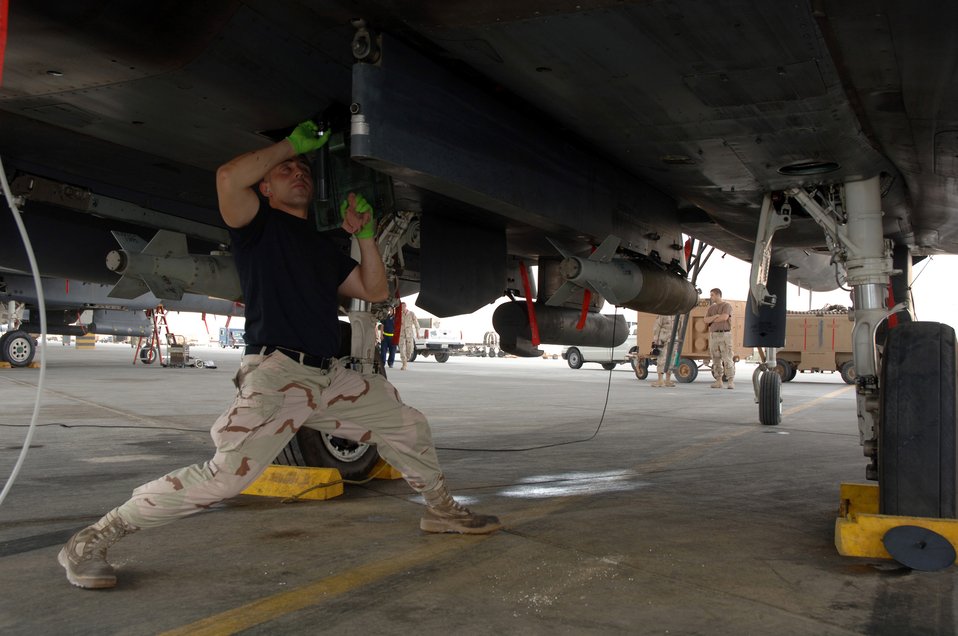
Deployed F-15s

An Airman with the 379th Expeditionary Aircraft Maintenance Squadron inspects an F-15E Strike Eagle at a forward-deployed location in Southwest Asia, on Wednesday, April 5, 2006. The F-15E is a dual-role fighter designed to perform air-to-air and air-to-ground missions. It is deployed from Seymour Johnson Air Force Base, N.C.